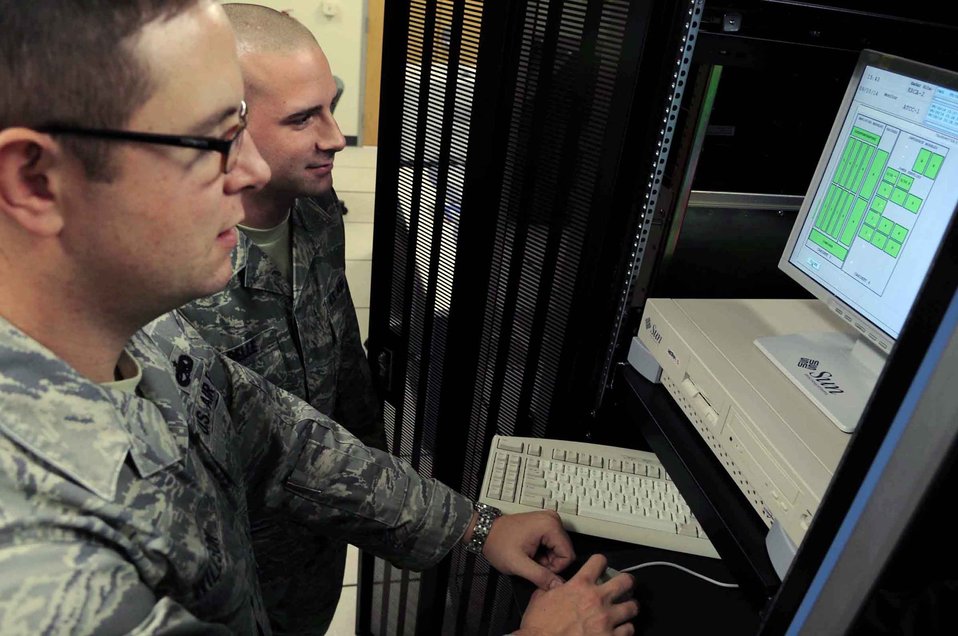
Ellsworth officials launch digital airport surveillance radar

Tech. Sgt. Jason Willson and Airman 1st Class Gary Isabelle view the status of the digital airport surveillance radar Oct. 14, 2009, at Ellsworth Air Force Base, S.D. Sergeant Wilson is the 28th Communications Squadron radar maintenance NCO in charge, and Airman Isabelle is a 28th CS radar maintenance technician.